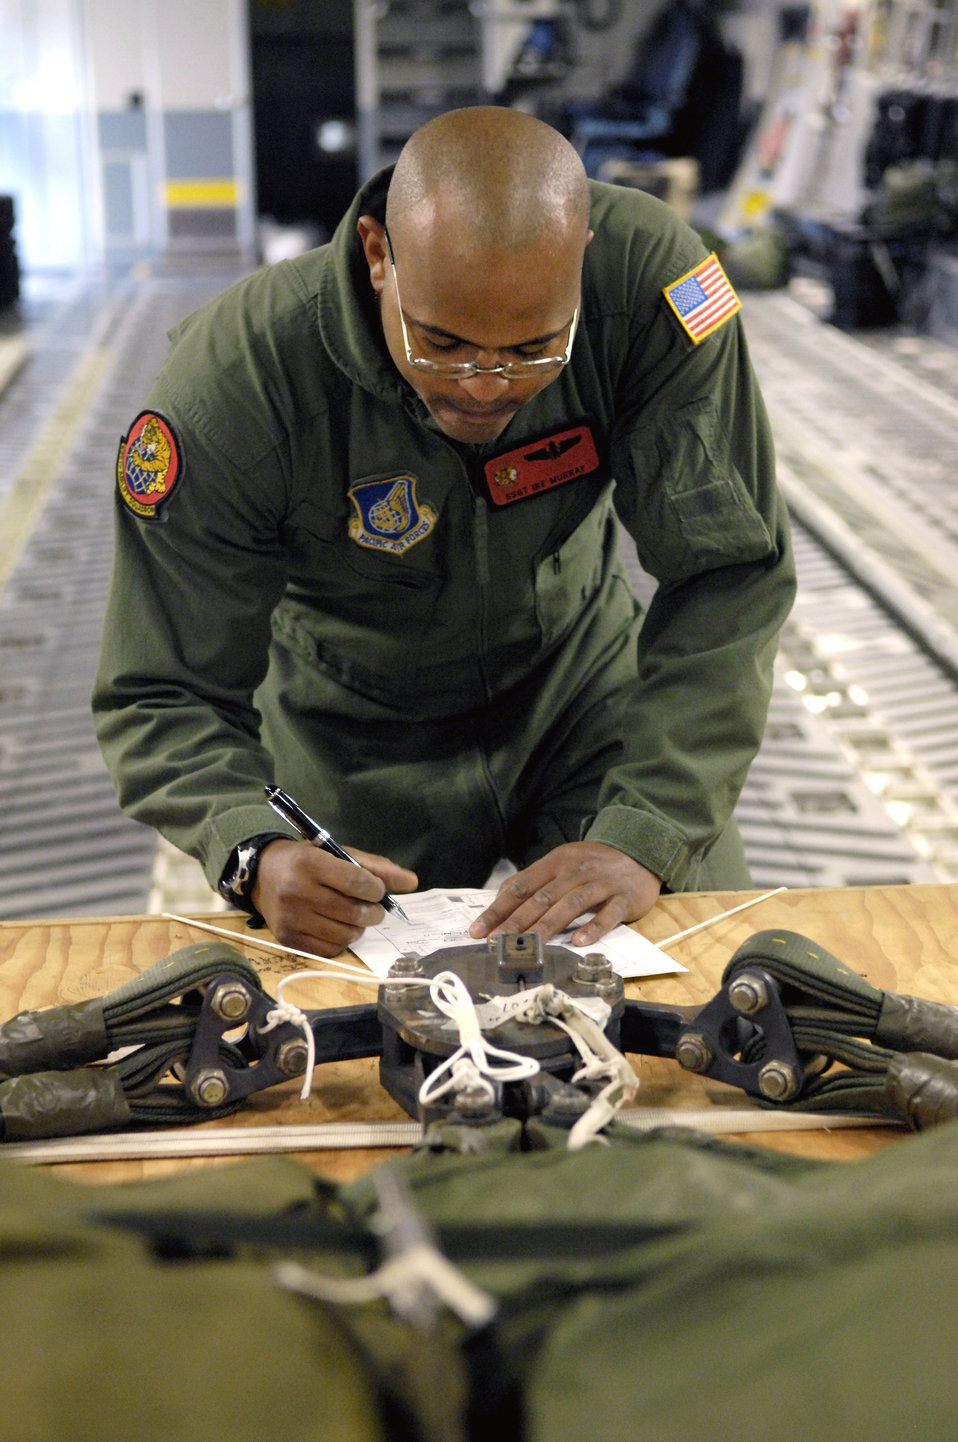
Hickam Airmen conduct 4-ship C-17 airdrop training

Staff Sgt. Ike Murray goes over a joint airdrop inspection checklist Aug. 13 at Hickam Air Force Base, Hawaii. Sergeant Murray, a loadmaster with the 535th Airlift Squadron, is inspecting the parachute rigging on a C-17 Globemaster III for a four-ship, airdrop training mission.